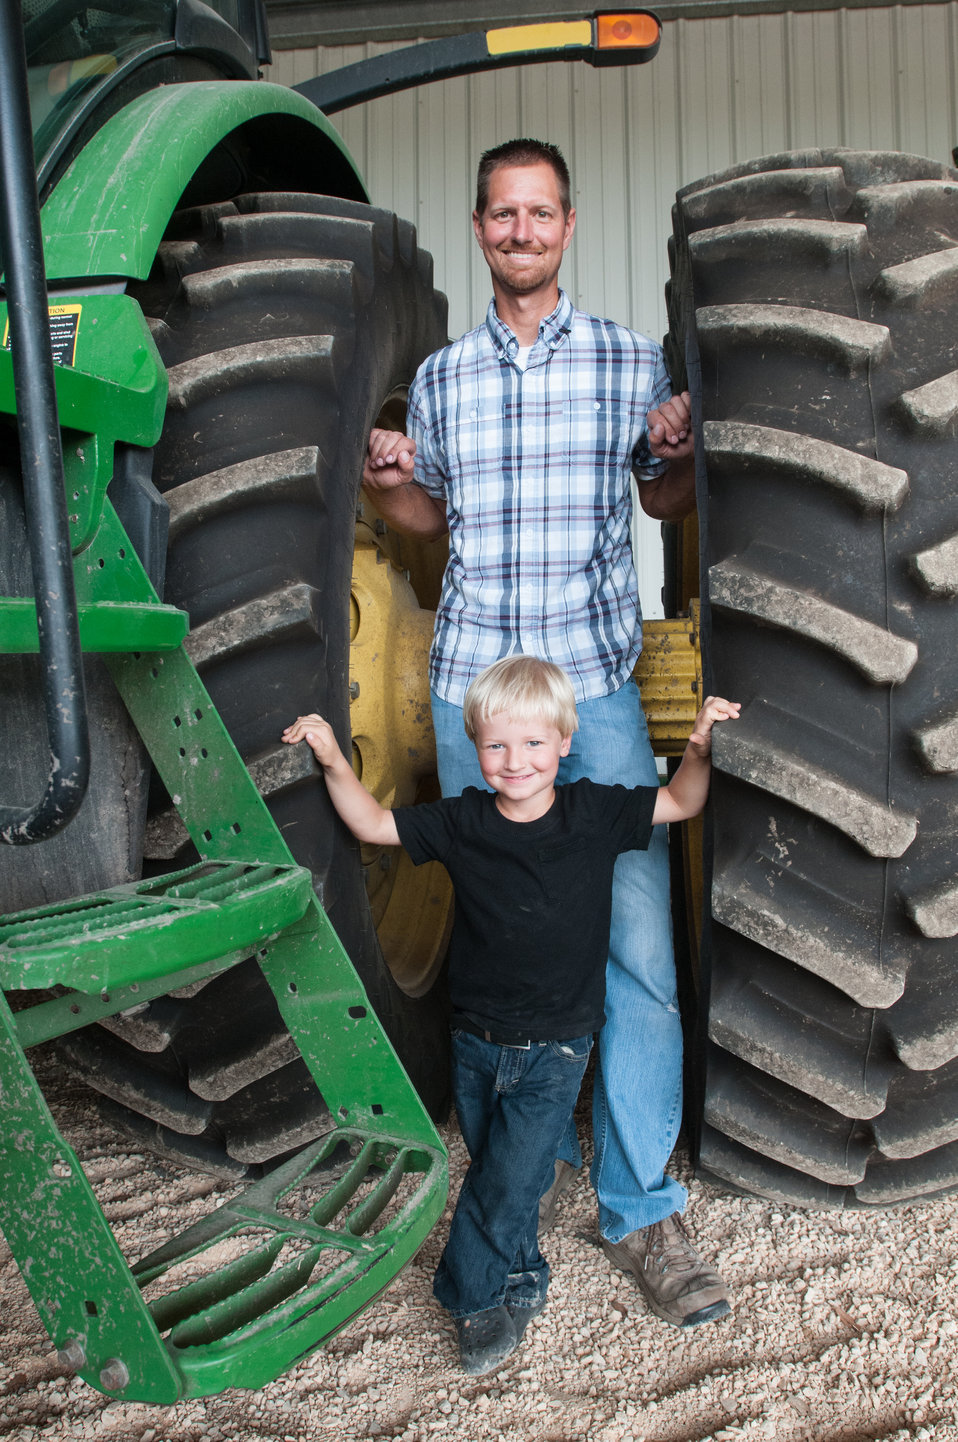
Michael Popp (pronounced Pope) and son Hayden smile while standing with their tractor equipped with two six-foot rear wheels per side in El Campo, TX on Jun. 20, 2013. The Popp Farms 05 spans five generations on their 2,400 acres of farmland. The farm currently grows cotton and milo (grain sorghum) and are part of the United Agricultural Cooperative, Incorporated.